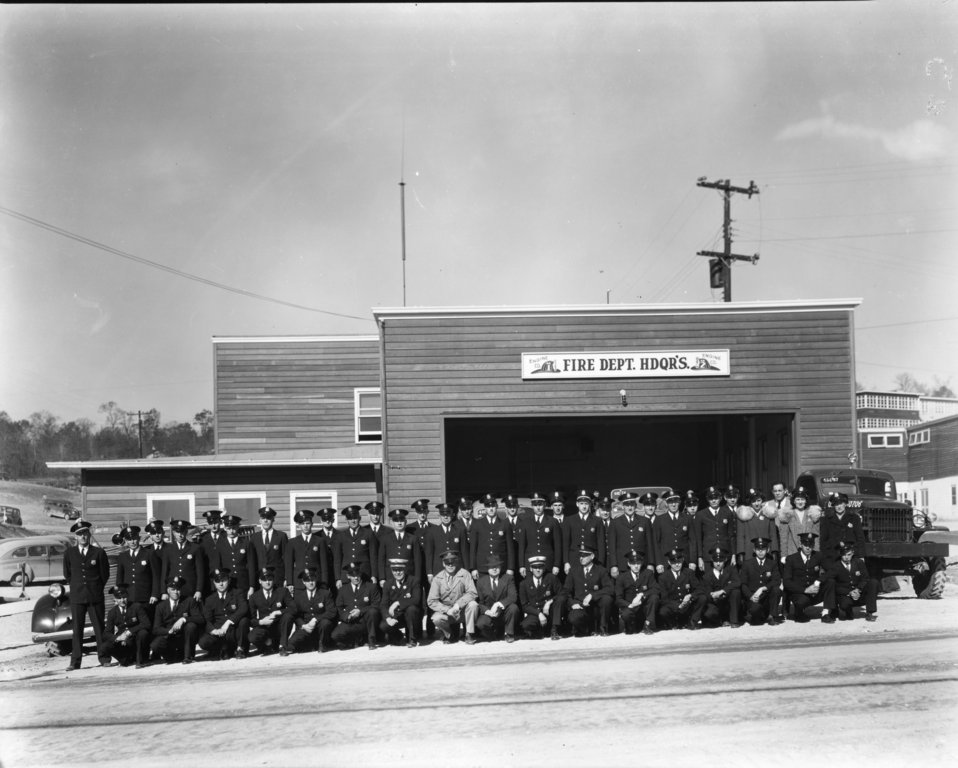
Services at Oak Ridge